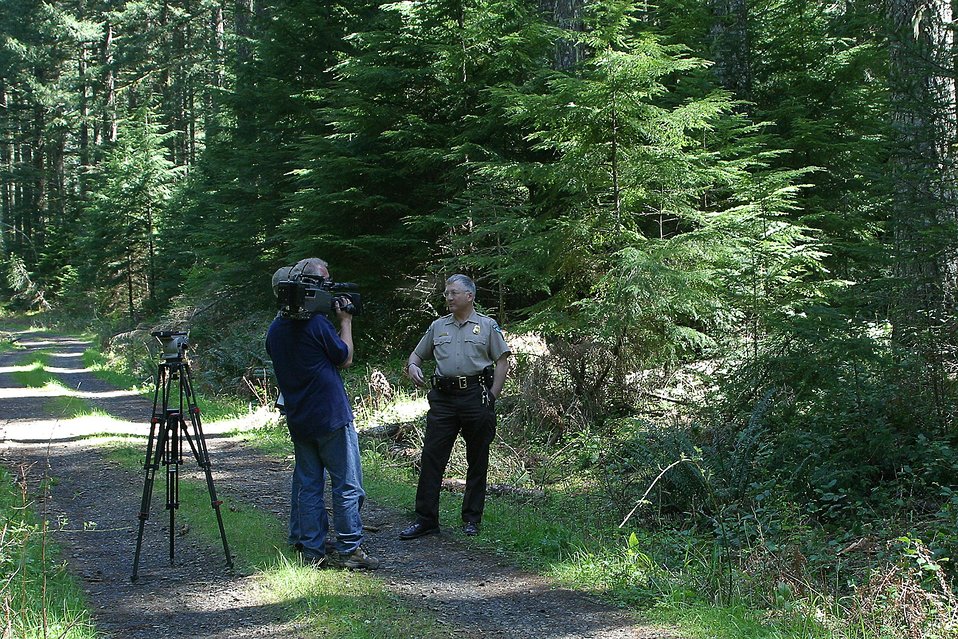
Jim Newman from OPB interviews Salem District Ranger Dennis Daraghy about timber theft in the Santiam watershed on BLM Public Lands.